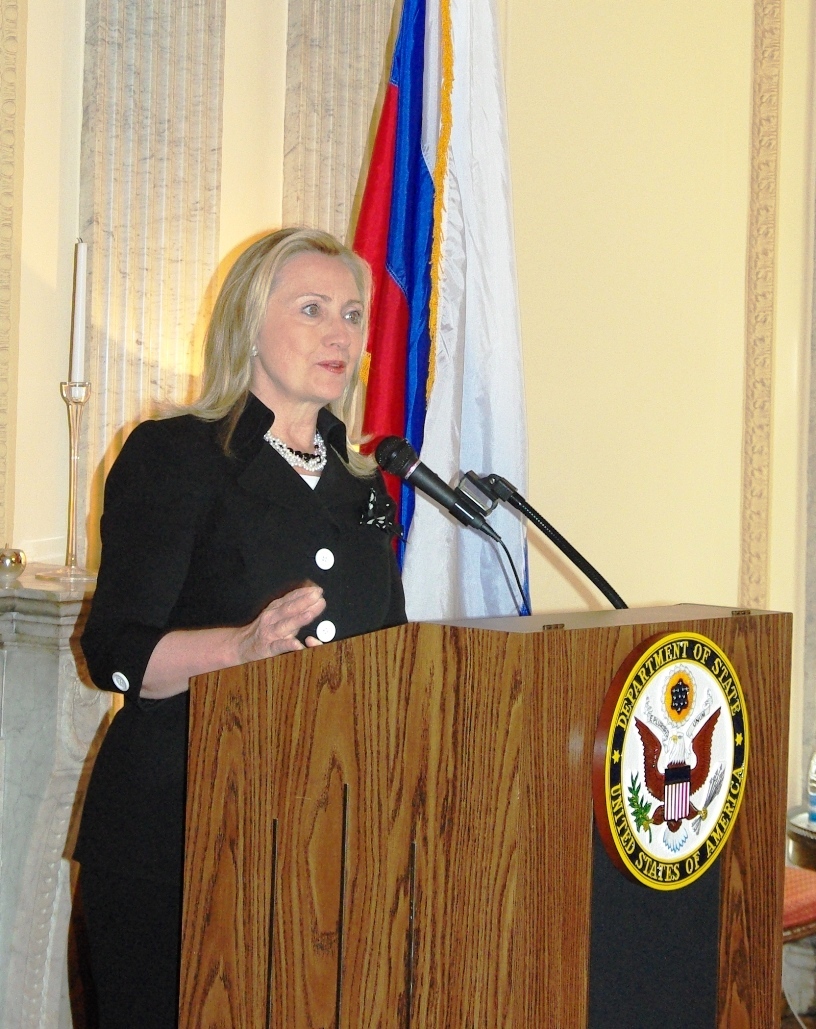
Secretary Clinton Addresses Civil Society Leaders

U.S. Secretary of State Hillary Rodham Clinton Secretary Clinton addresses civil society leaders at the Consul General’s Residence in St. Petersburg, Russia, on June 29, 2012.